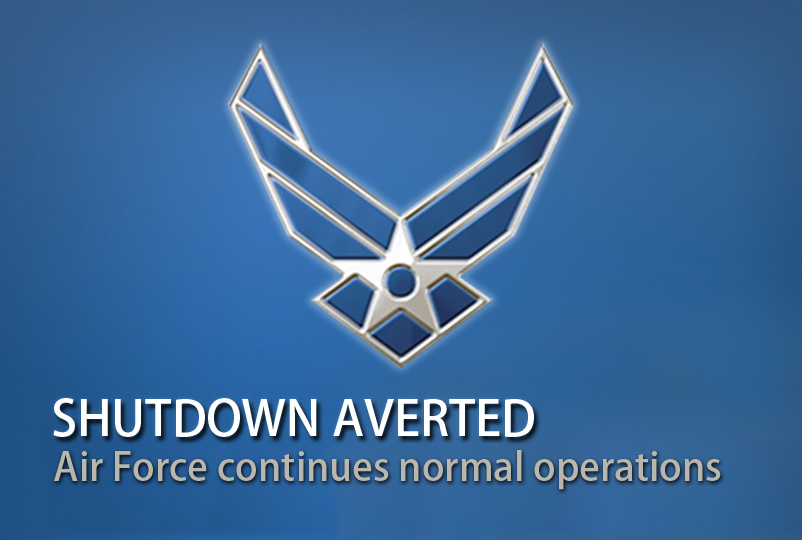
Shutdown averted